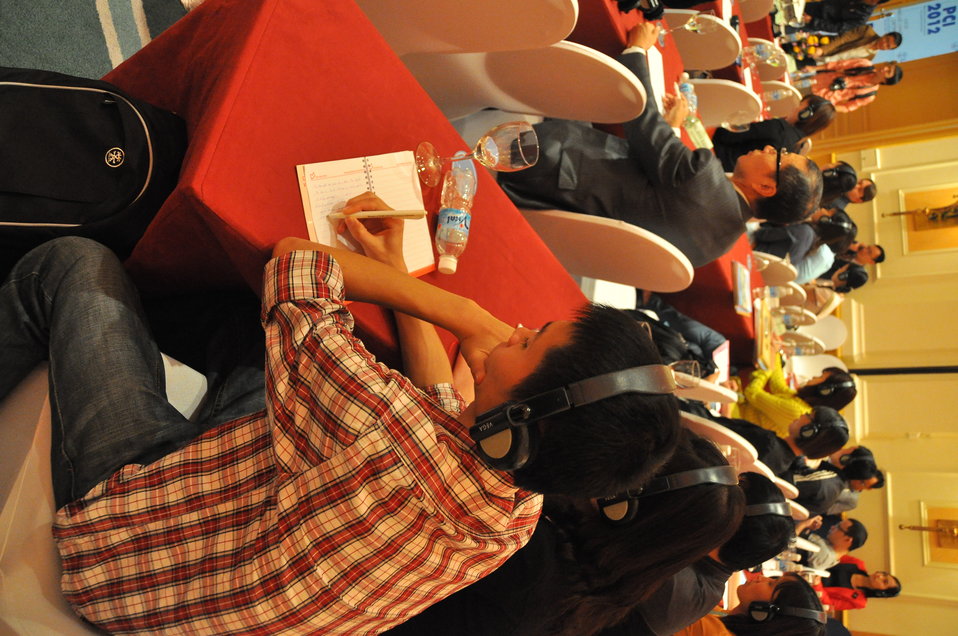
Provincial Competitiveness Index Launch, March 14, 2013

Hanoi, March 13, 2013